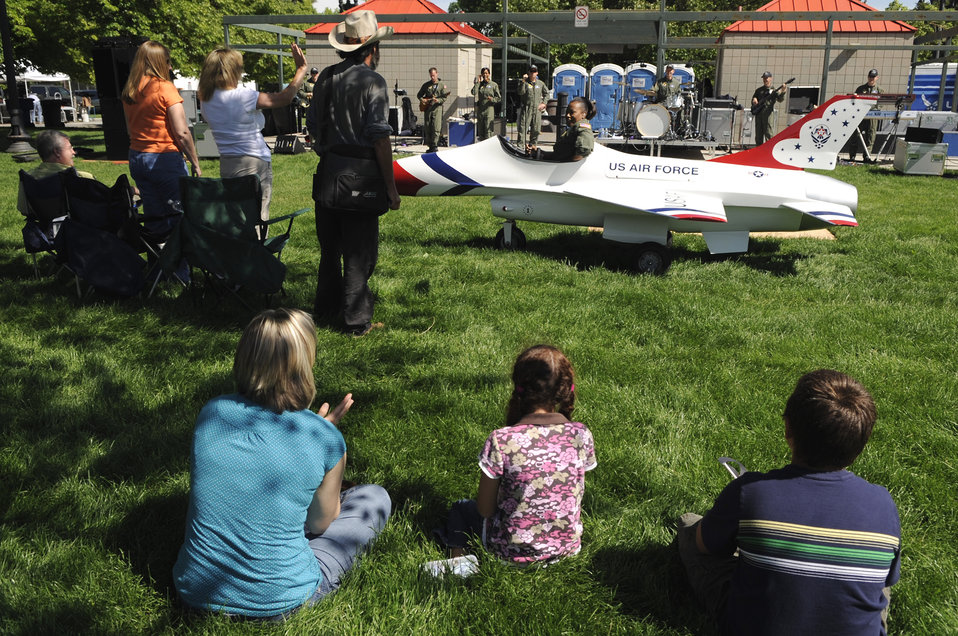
Our Nation's Defenders Showcase

Salt Lake City locals watch Master Sgt. Regina Coonrod